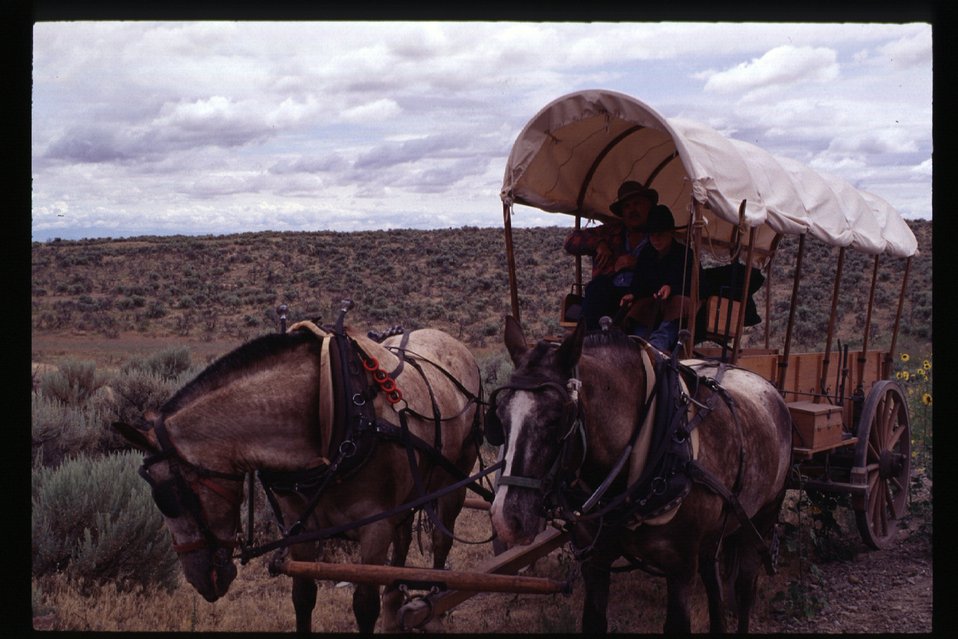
Oregon Trail Reenactment Wagon USRD Upper Snake River District